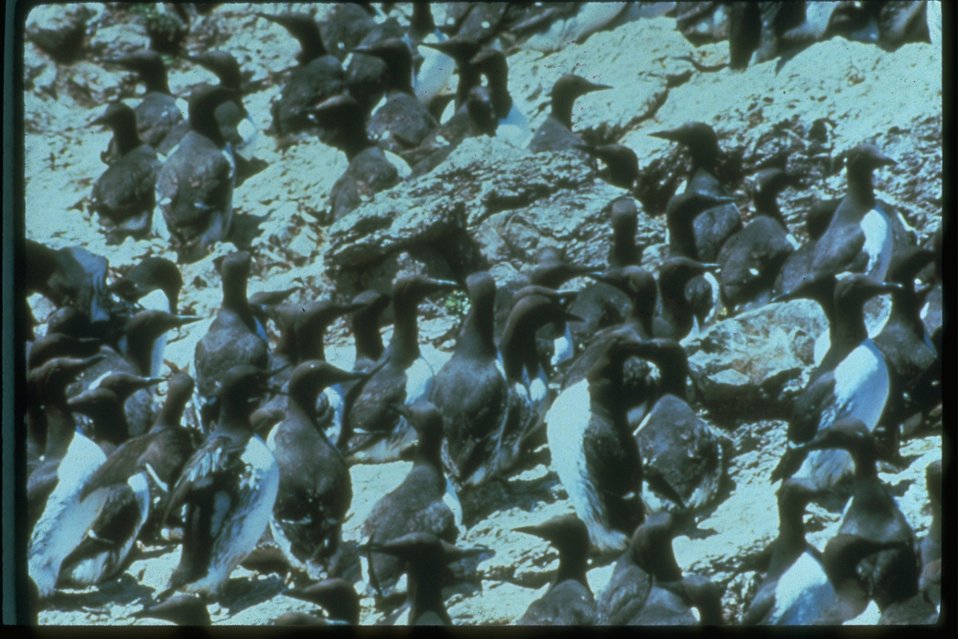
Common Murre colony on Colony Rock at the Yaquina Head ONA.